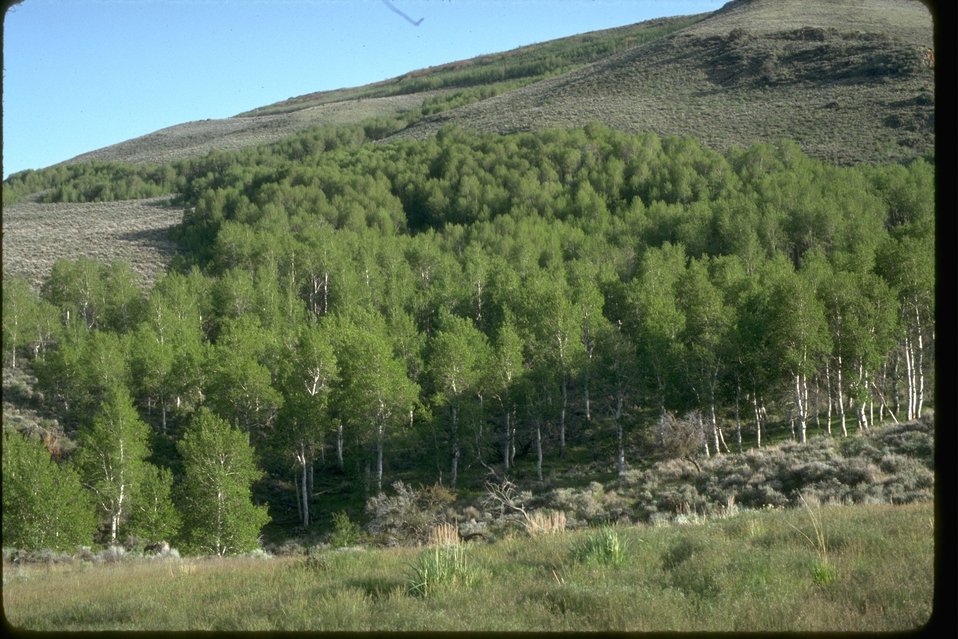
Aspen stand in the Twelve Mile Creek Wilderness Study Area. OR 3-162